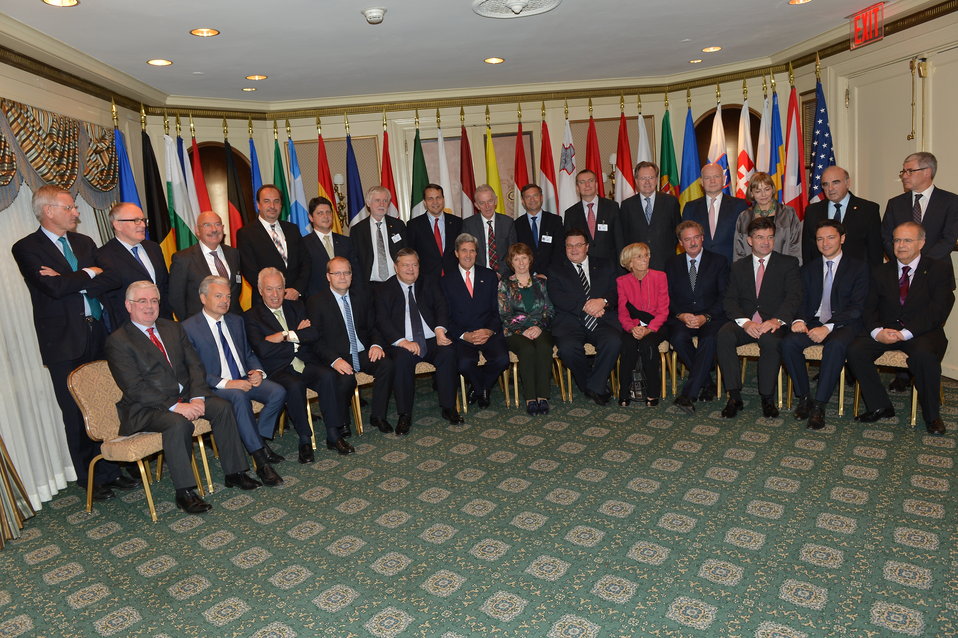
Secretary Kerry Poses for a Photo With Members of the EU28

U.S. Secretary of State John Kerry attends an event for the EU28 in New York City on September 26, 2013.